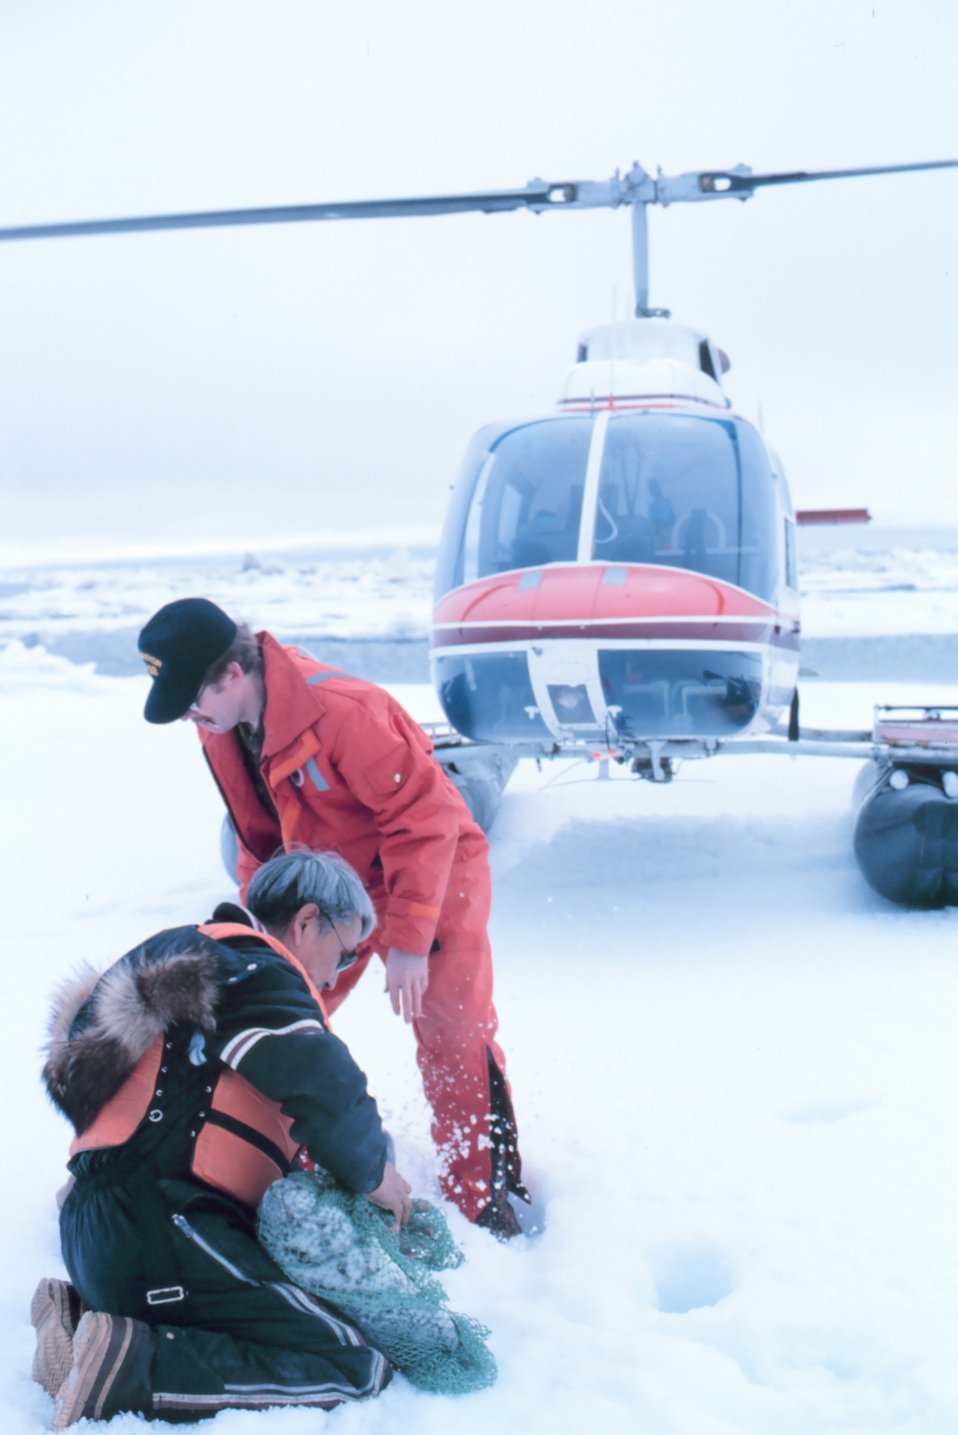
Helicopter transport for scientists during seal tagging operations.